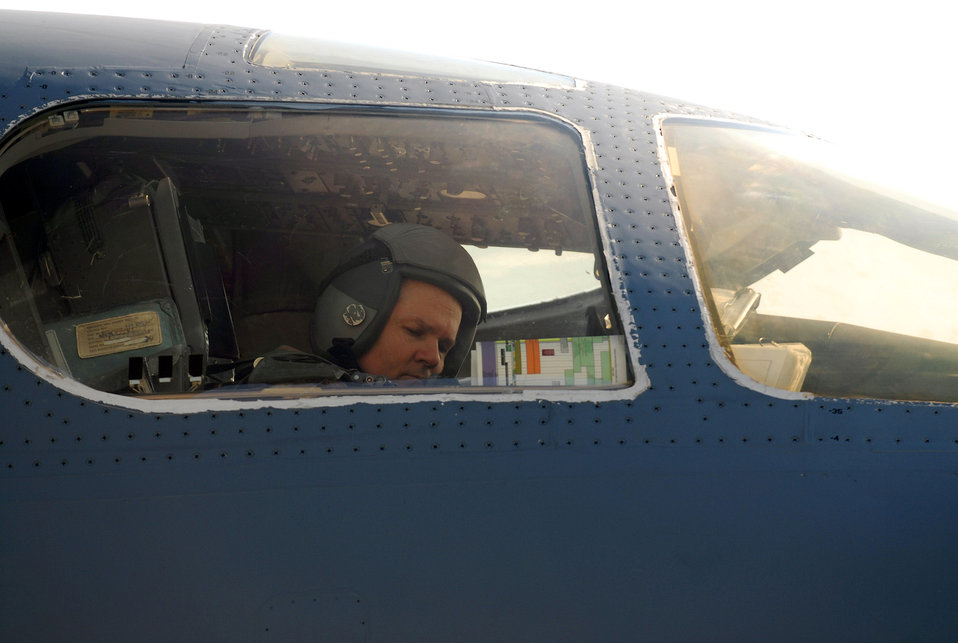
Getting a B-1B ready to launch

Brig. Gen. Charlie Lyon settles into the copilot's seat of the B-1B Lancer bomber he will fly on a mission Dec. 29. General Lyon is the 379th Air Expeditionary Wing commander at an air base in Southwest Asia.